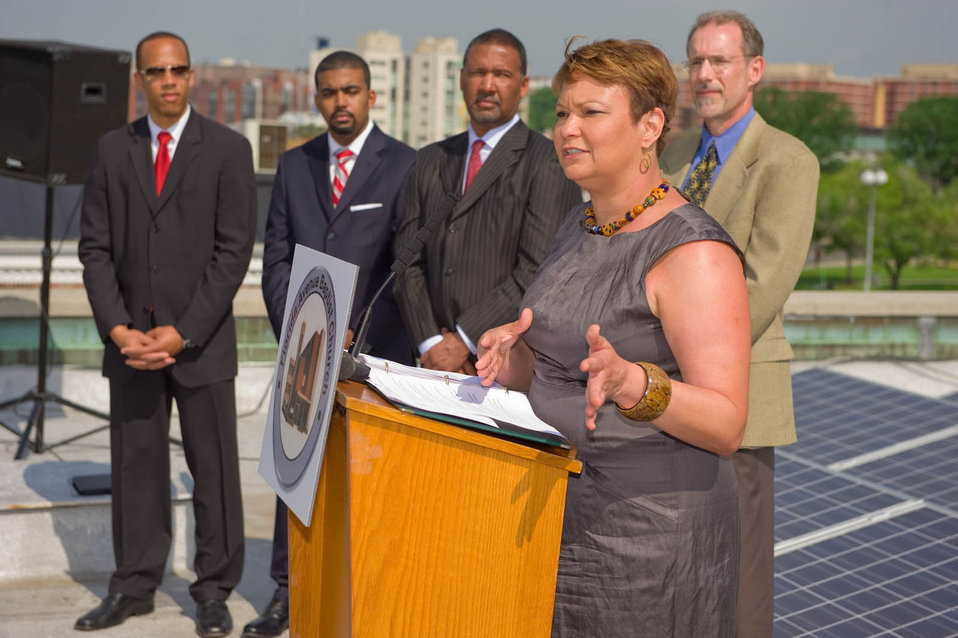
2011-05-03 FlaAveSolar 012